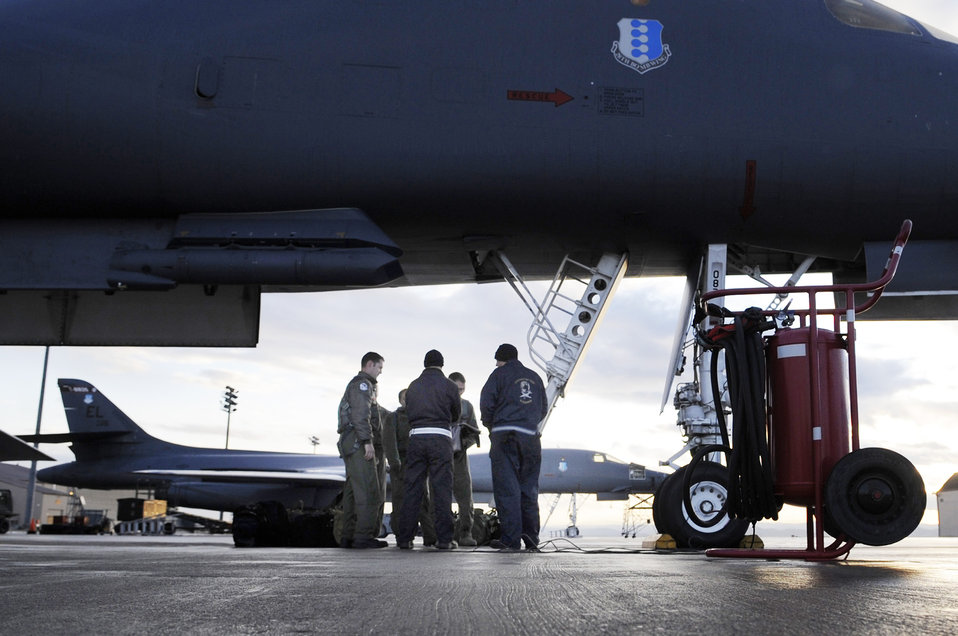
B-1s at Ellsworth

During a preflight check of a B-1B Lancer sitting on the ramp at Ellsworth Air Force Base, S.D., Oct. 15, 2009, the aircrew members talk with the aircraft's crew chiefs about recent maintenance on the bomber.